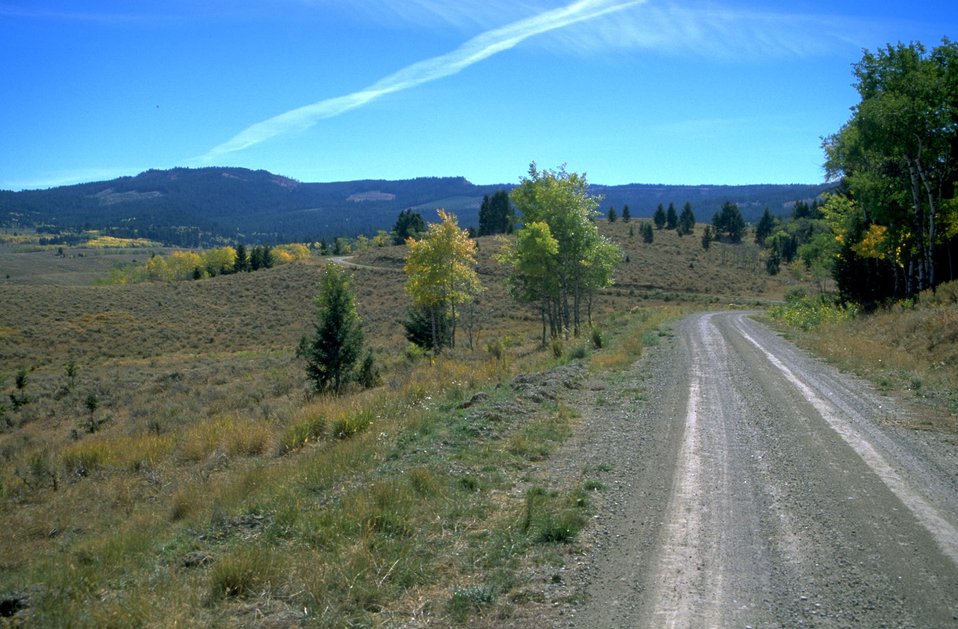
East Fork Blacktail road going through sagebrush and Aspen